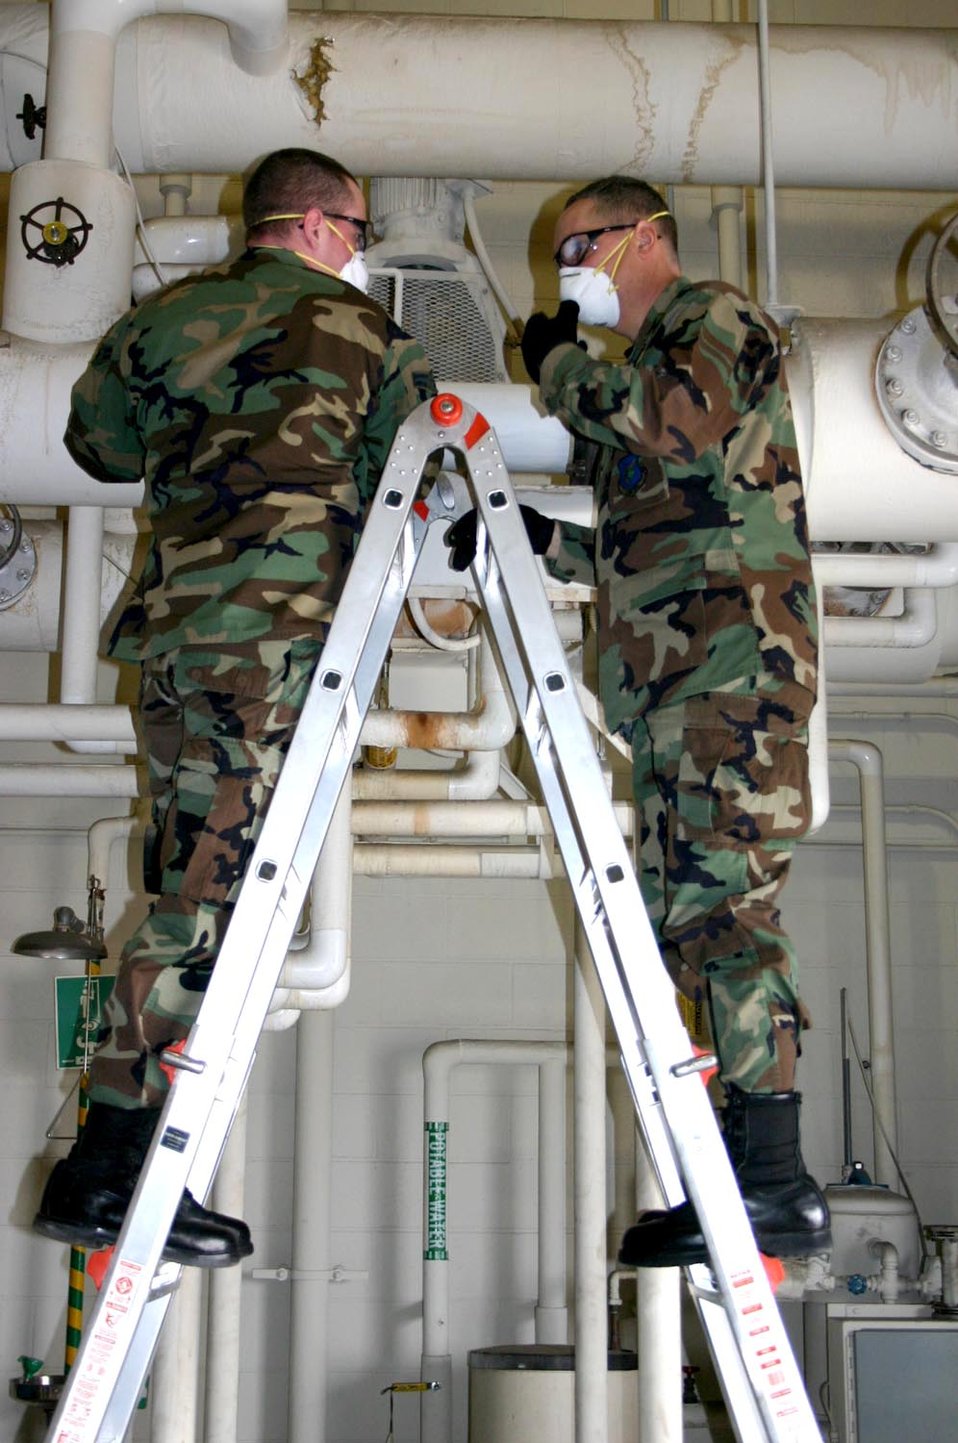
McGuire commander is 'hands on' saving energy

Airman 1st Class Christopher Felton (left) and Col. Rick Martin save energy by installing pipe insulation on a high-temperature water line March 22 in a hangar at McGuire Air Force Base, N.J. Colonel Martin is the 305th Air Mobility Wing commander and Airman Felton is with the 305th Civil Engineer Squadron.